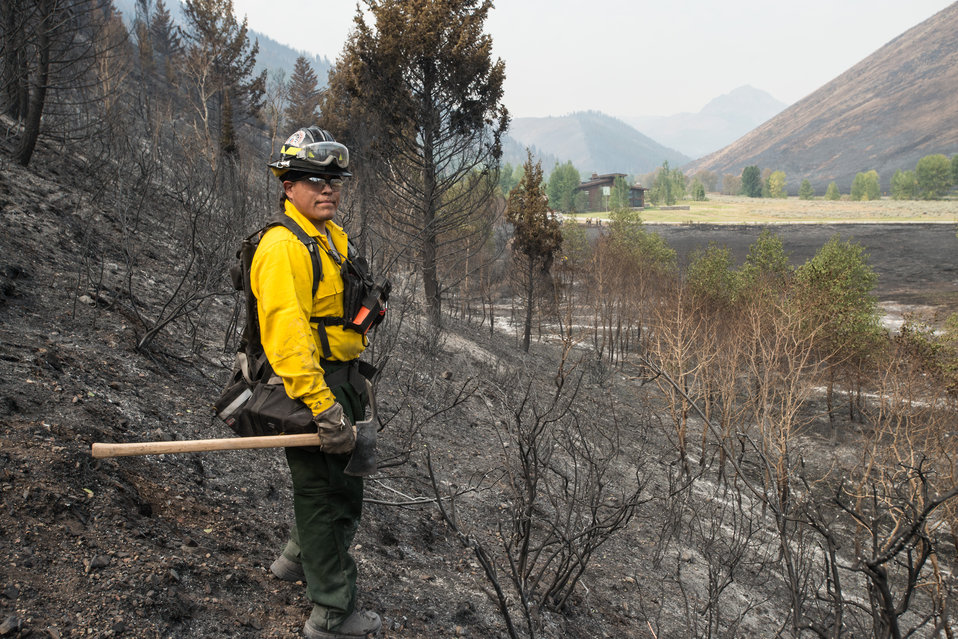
Department of the Interior, Indian Affairs (BIA) Southern Plains Initial Attack Type 2 Crew Ryan Blackstar, a Sawyer B Faller, looks across the valley floor that was mostly protected from fire damage, during the Beaver Creek Fire, west of Hailey, ID, in the U.S. Department of Agriculture (USDA) Forest Service (FS) and Sawtooth National Forest and Bureau of Land Management (BLM) lands, on Wednesday, Aug 21, 2013.

He scans the area to get his bearings as the crew walks a line along the hillside. In the distance is one of the homes that were saved. A sawyer is a person who runs the power saws to cut down trees. The B qualification means the person has demonstrated sufficient judgment, skill, and knowledge to be trained or certified in moderately complex chain saw operations. Certified Faller B individuals may work independently on project or fireline assignments up to their level of skill. They demonstrate the judgment to decline assignments that exceed their skill level.